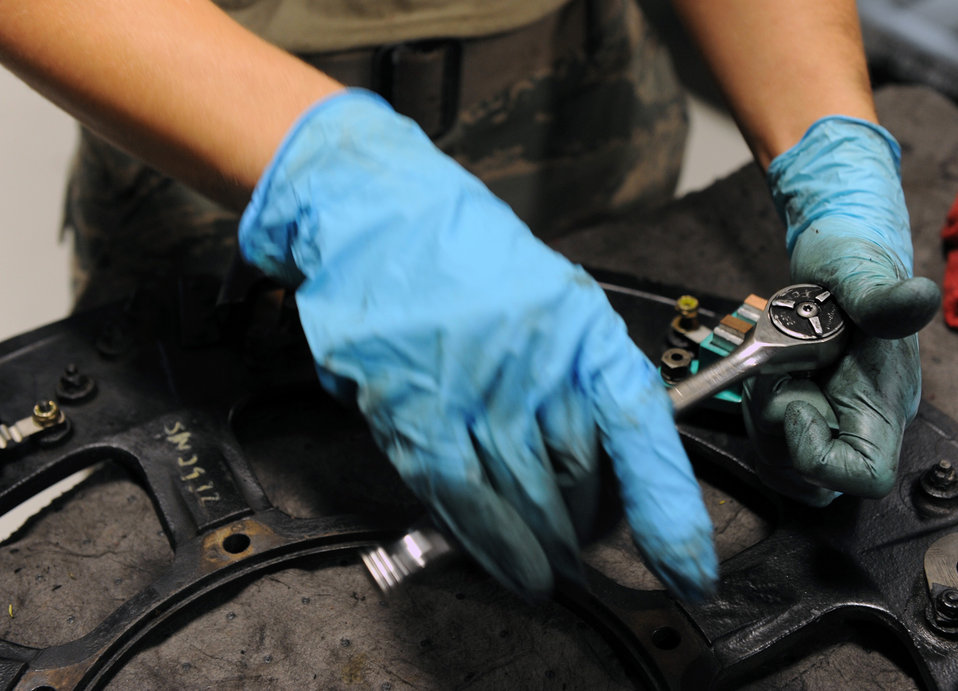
C-130 engine maintenance

Senior Airman Sarah Briest performs maintenance on a C-130 Hercules engine component May 31, 2011, at Little Rock Air Force Base, Ark. Airman Briest is an aerospace propulsion journeyman assigned to the 19th Component Maintenance Squadron.